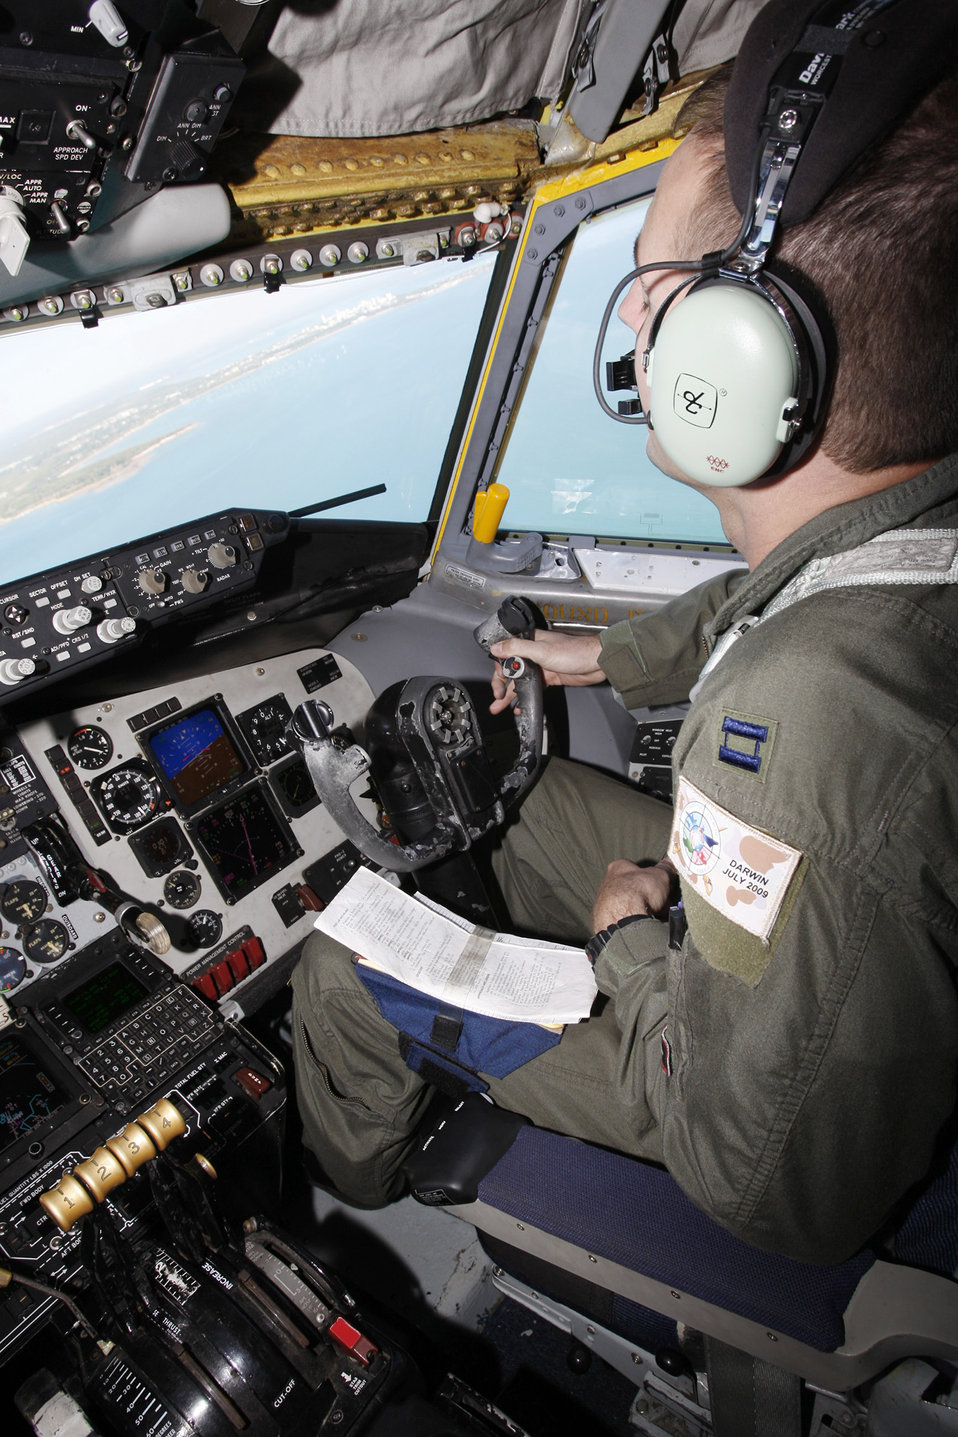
Exercise Talisman Saber concludes

Capt. Lucas Karnes returns to Darwin, Australia, after an air-to-air refueling mission on board a KC-135 Stratotanker during exercise Talisman Saber 2009 July 15. Talisman Saber 2009 is a bilateral command post and field-training exercise between U.S. and Australian forces that concluded July 25. Captain Karnes is a KC-135 aircraft commander from the 909th Air Refueling Squadron at Kadena Air Base, Japan.